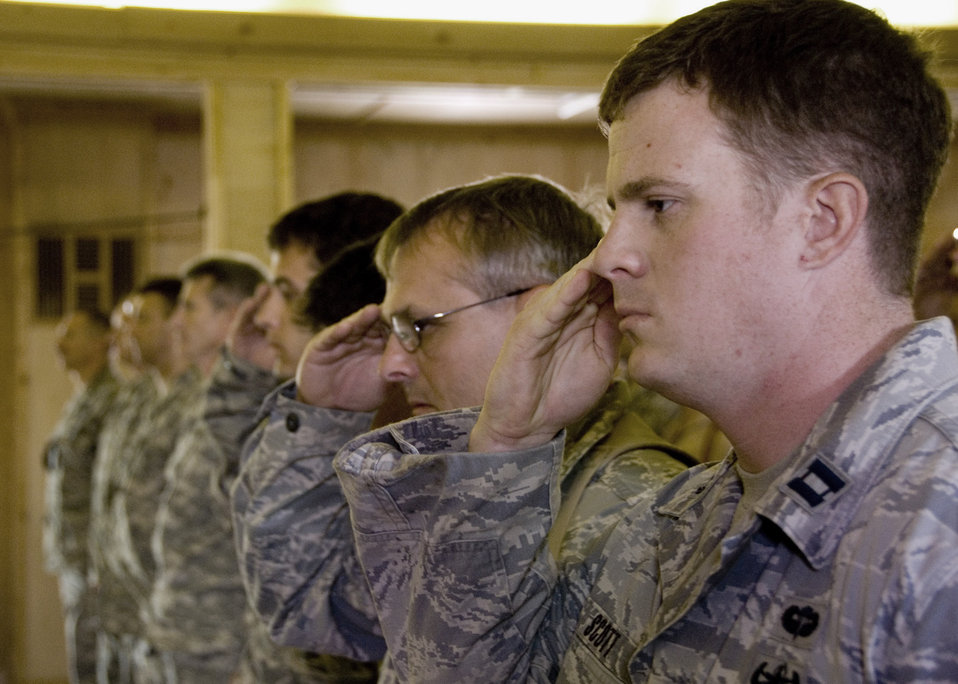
Memorial service honors fallen team leader

Capt. Robert Scott renders his final salute at the memorial service for fallen explosive ordnance device team leader Staff Sgt. Phillip Myers April 6 at the base chapel at Kandahar Airfield, Afghanistan. Sergeant Myers was killed by an improvised explosive device April 3 during an EOD operation in Musa Qal'eh in the Helmand Province of Southern Afghanistan. Captain Scott is the 755th Air Expeditionary Group Explosive Ordinance Disposal Operational Location Bravo officer in charge.